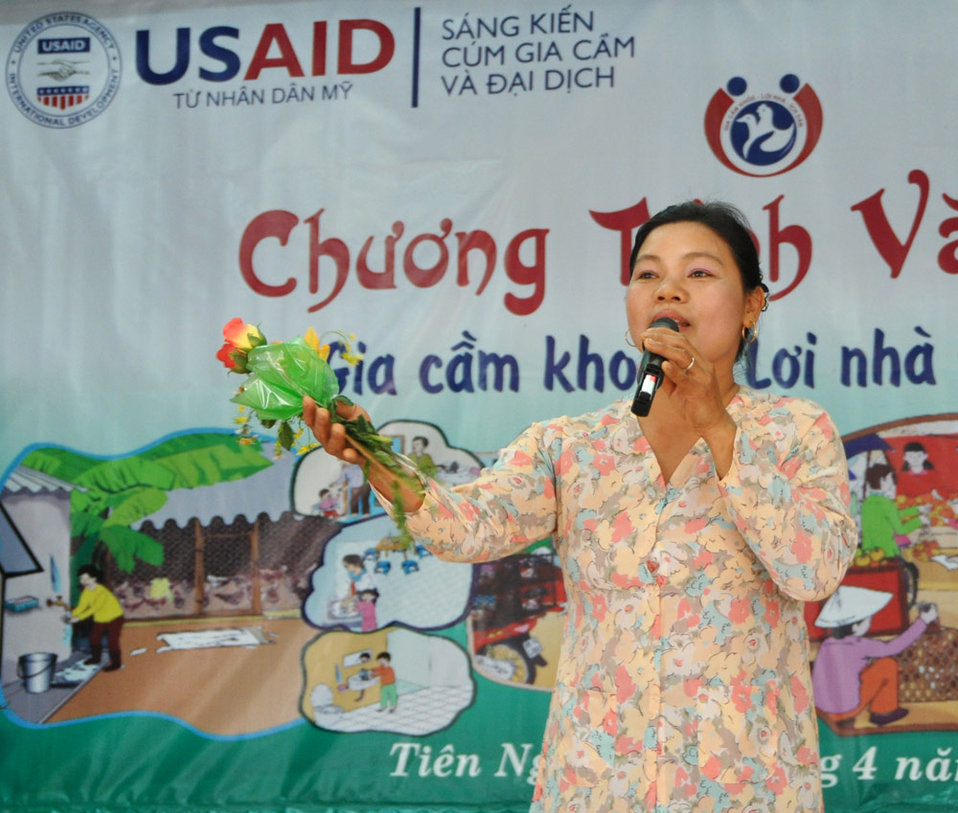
Residents in Vietnam's Tien Ngoai Commune, Duy Tien District, Ha Nam Province, discuss ways to prevent and control avian and pandemic influenza.

Singers and actors bring excitement ot the the community events.